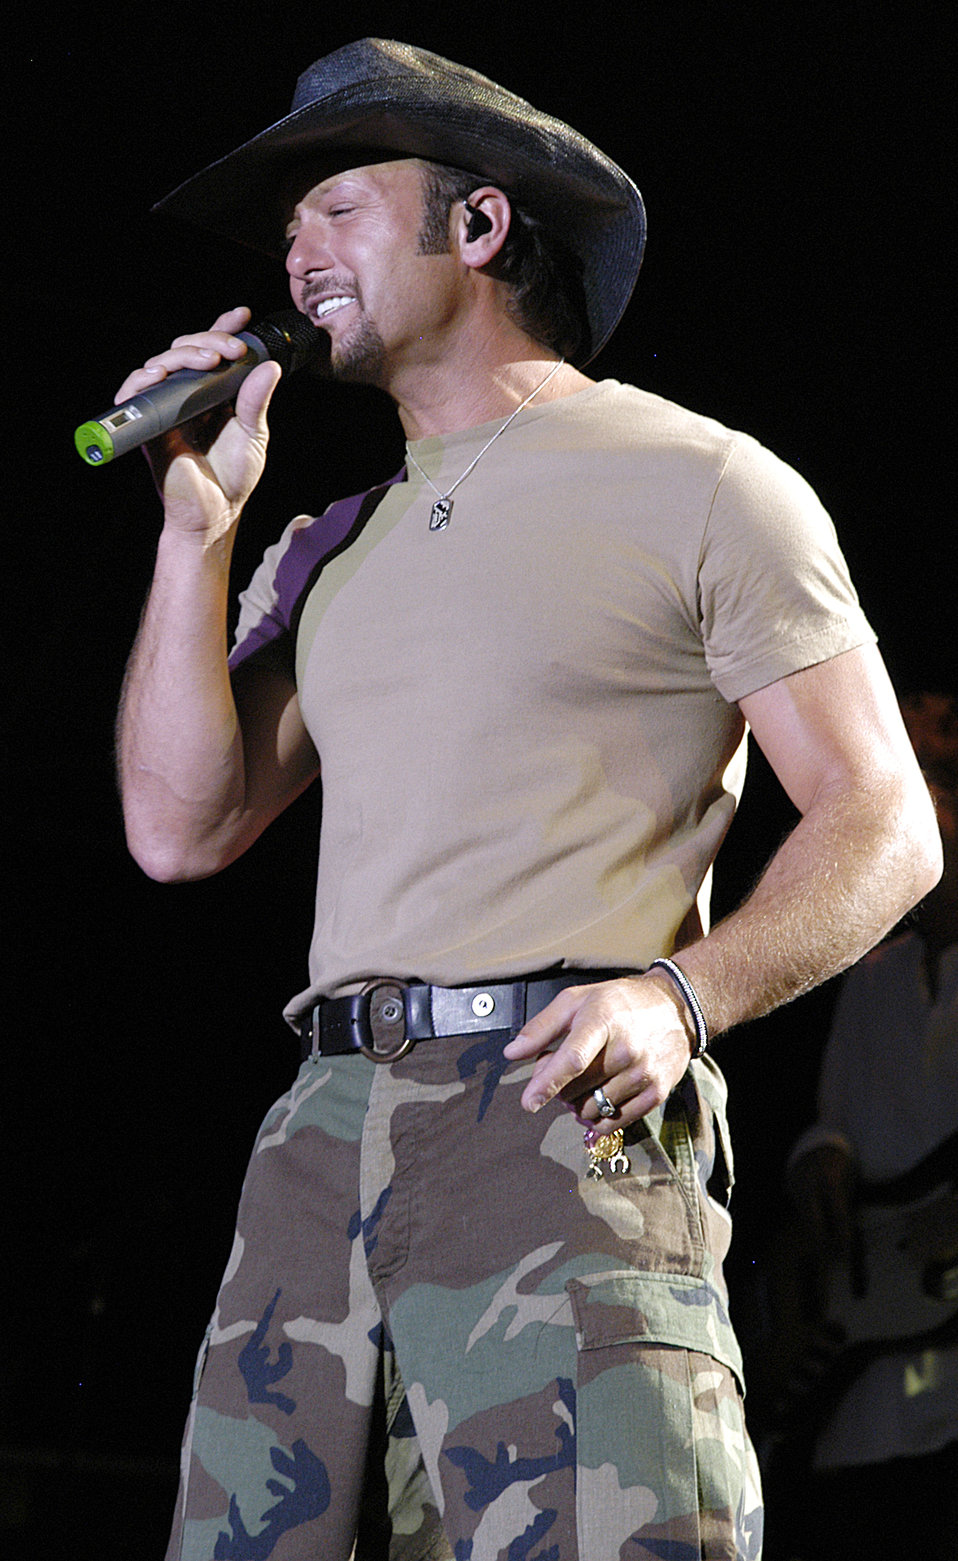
McGraw give military free concert

FORT CARSON, Colo. (AFPN) -- Country music star Tim McGraw performs here May 21 to more than 20,000 airmen, soldiers, sailors, Marines, and family members during a free concert to show appreciation for the military.